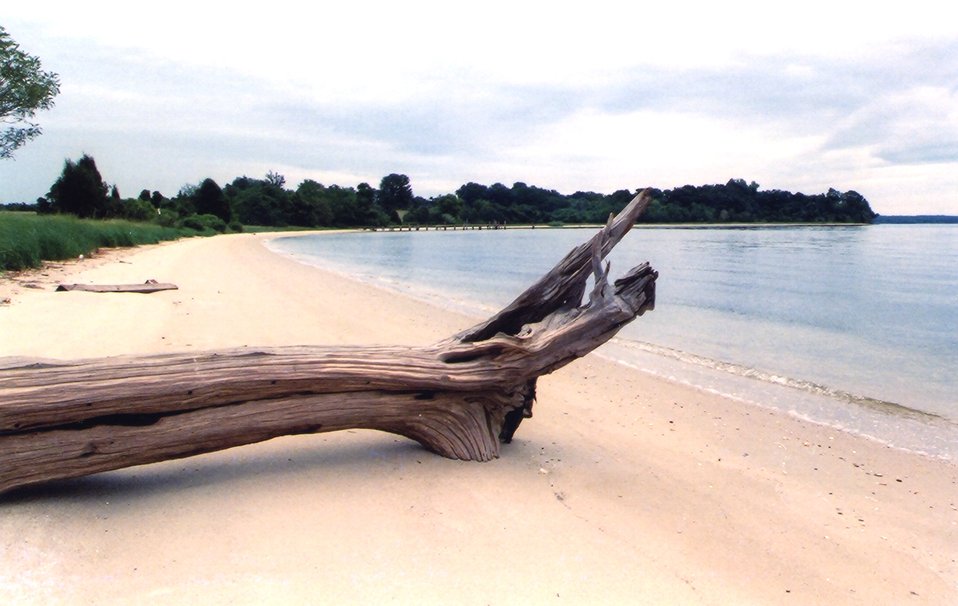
A beautiful Patuxent River shoreline at low tide.